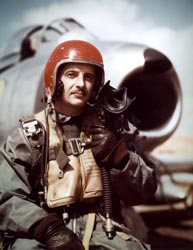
Captain Fernandez

Capt. Manuel J. Fernandez Jr. was the number 3 ace of the Korean War.